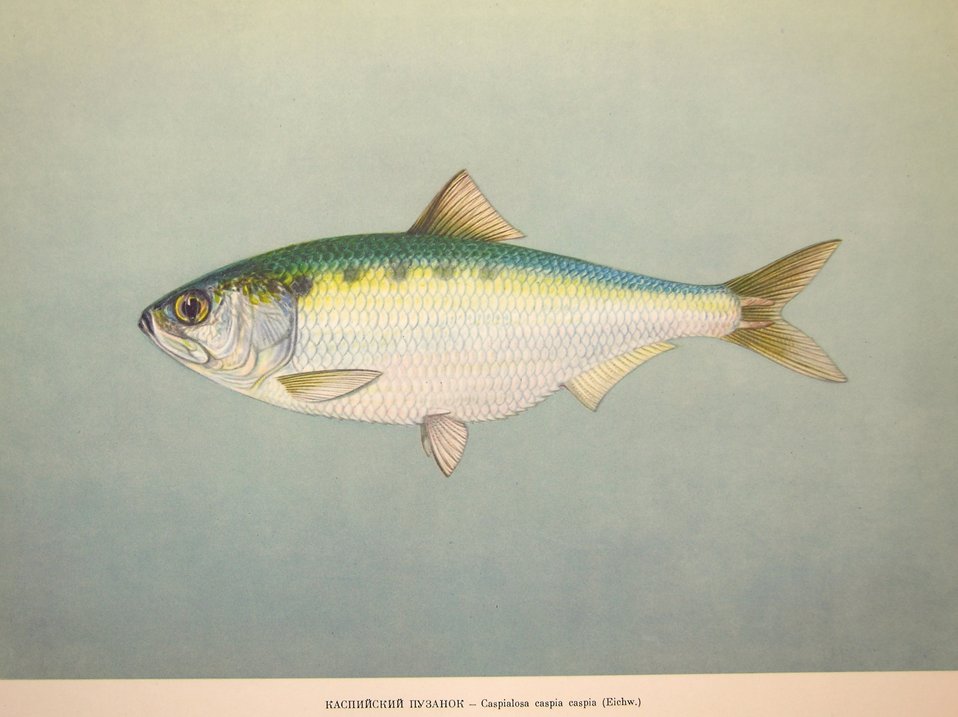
Plate 23. Caspialosa caspia caspia (Eichw.). Family Clupeidae. In: Fishery Resources of the USSR, N.N.Kondakov, Artist Editor. 1957. NOAA Central Library Call Number: SH91.R9 1957.